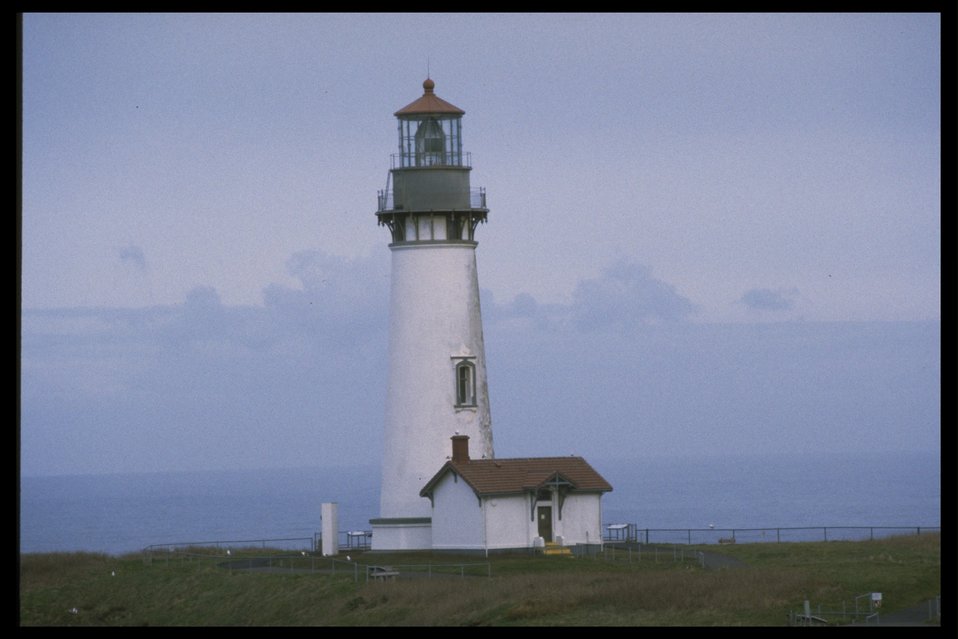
Yaquina Head Lighthouse.